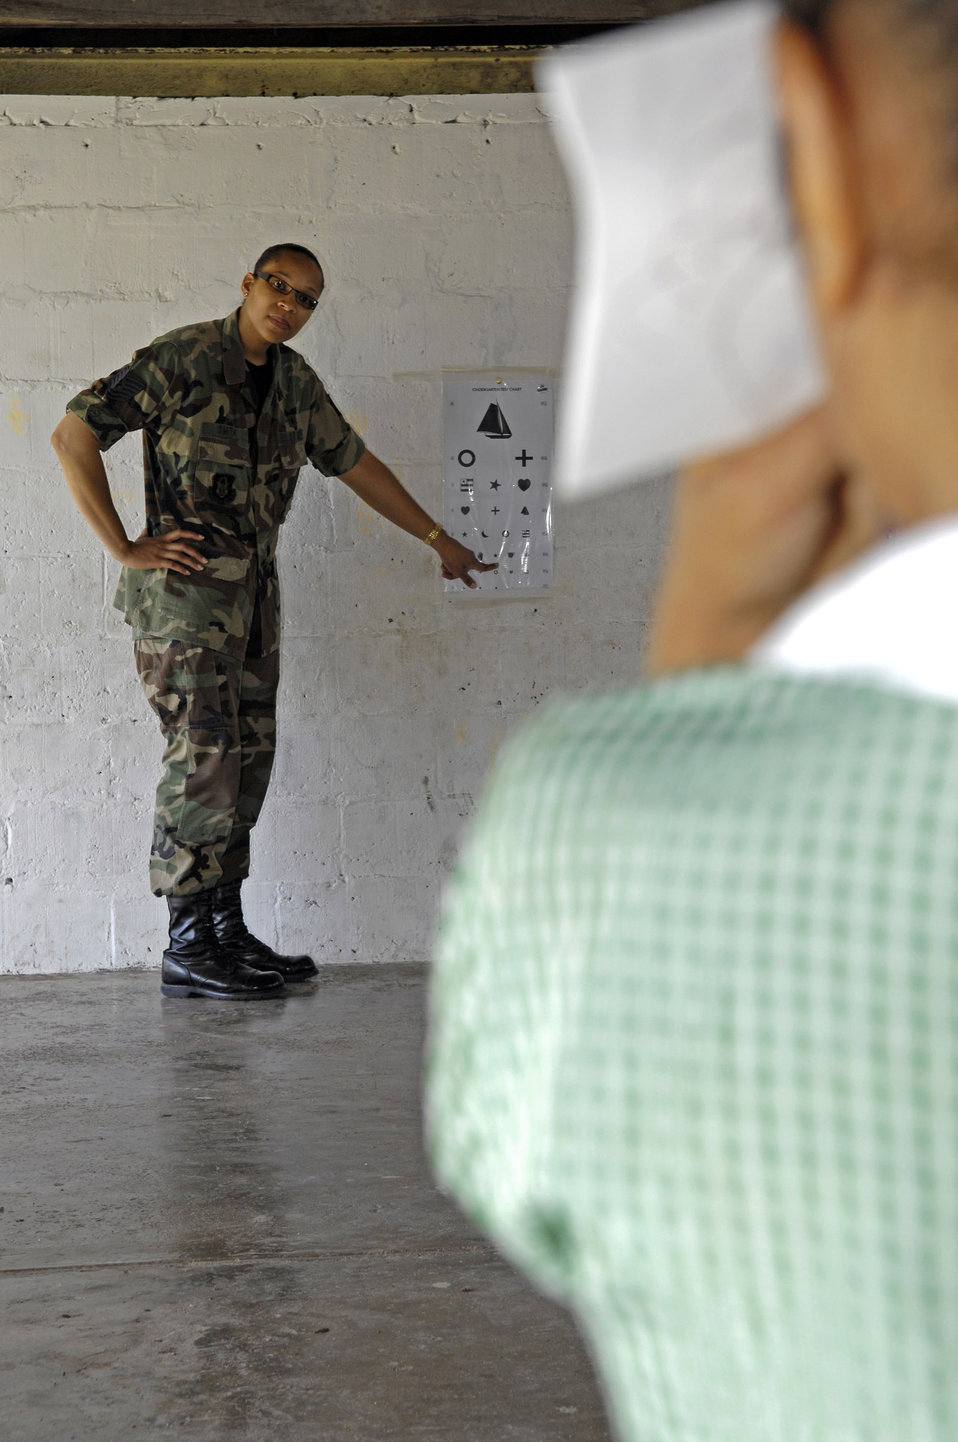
Joint team works to improve care in Nauru

Tech. Sgt. Niki Smith uses a symbol chart to test a child's vision July 21 on the south Pacific island of Nauru. Sergeant Smith is part of a 12-person, joint-force U.S. Pacific Command team deployed to Nauru to provide training and assistance to the island's medical professionals. Sergeant Smith is assigned to the 446th Aerospace Medicine Squadron from McChord Air Force Base, Wash.